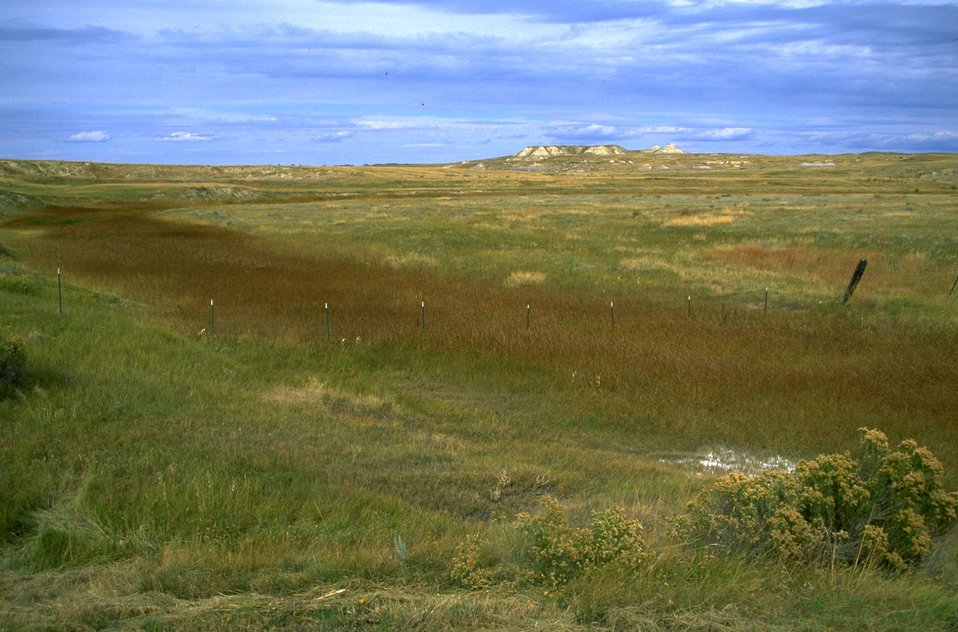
A variety of grasses on the eastern Montana prairie